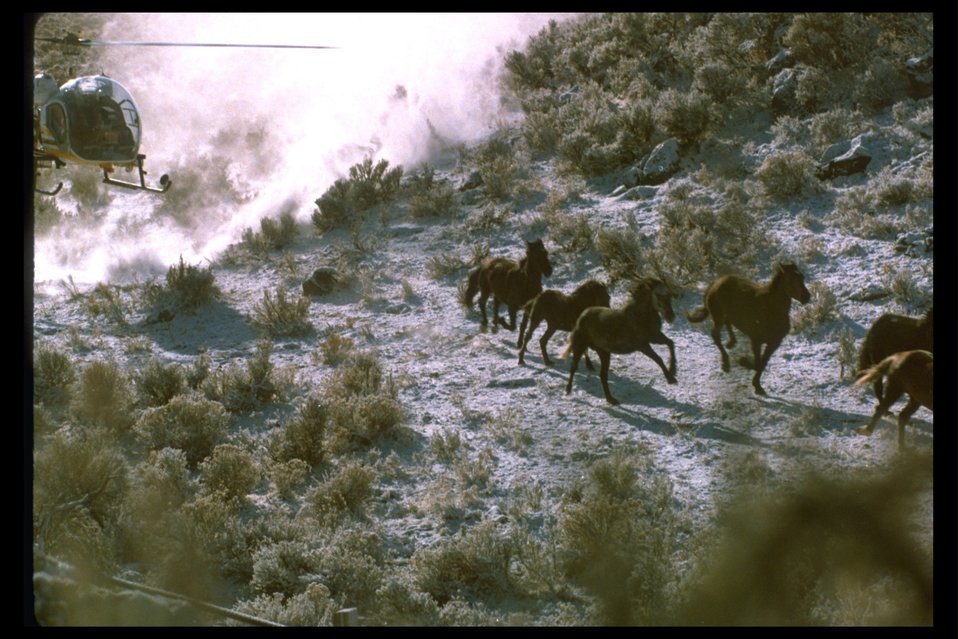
Helicopter drives horses into trap in West Warm Springs HMA.